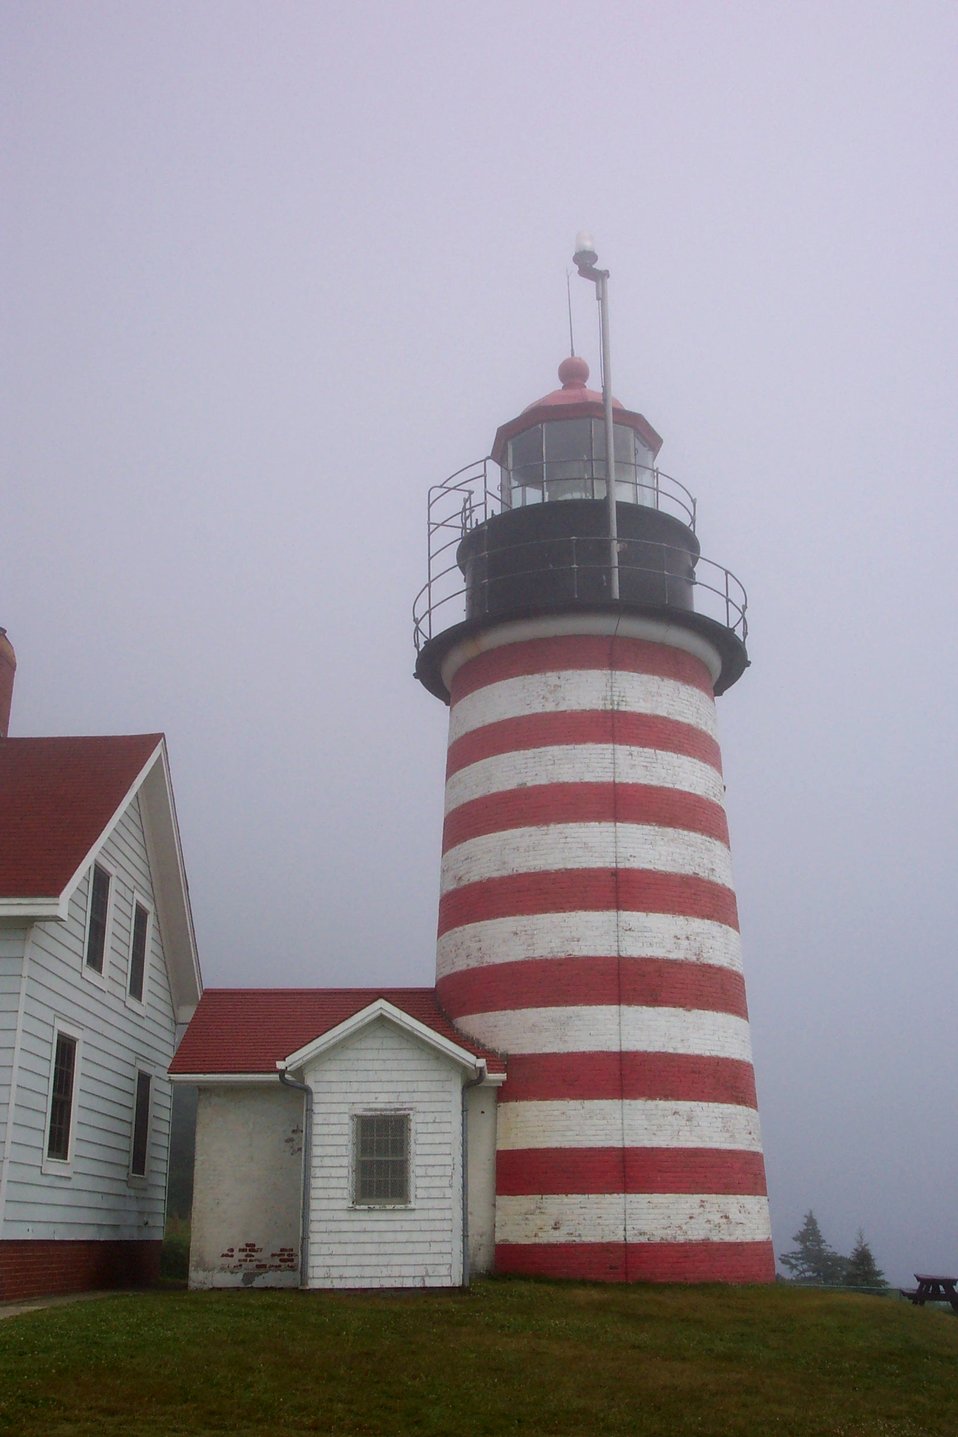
West Quoddy Head Lighthouse, the easternmost point in the contiguous United States.